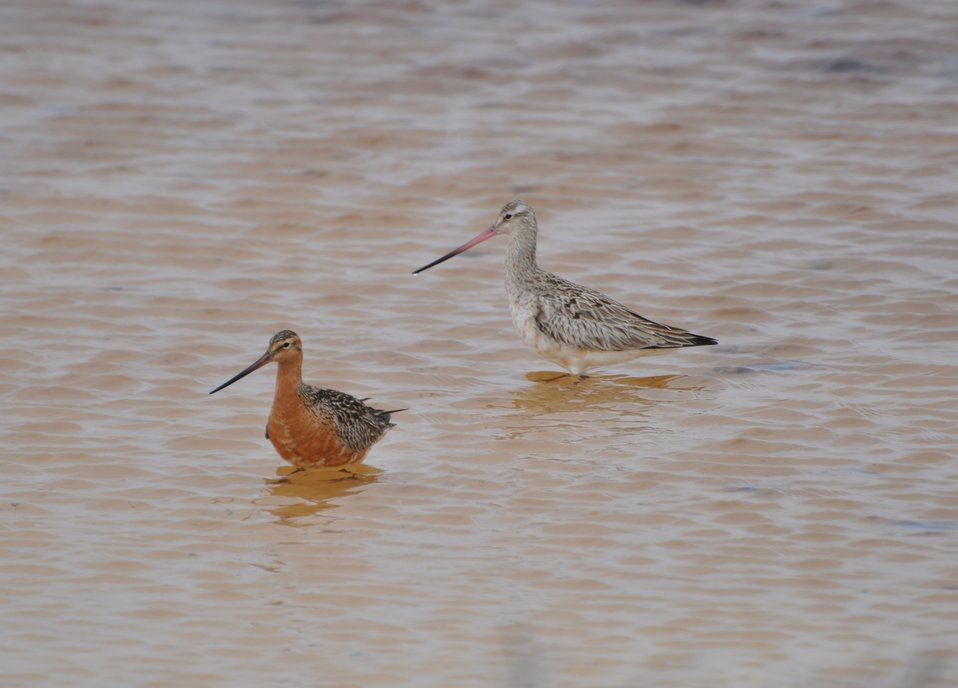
Bar-tailed Godwit pair

Andreafsky wilderness, Yukon Delta National Wildlife Refuge